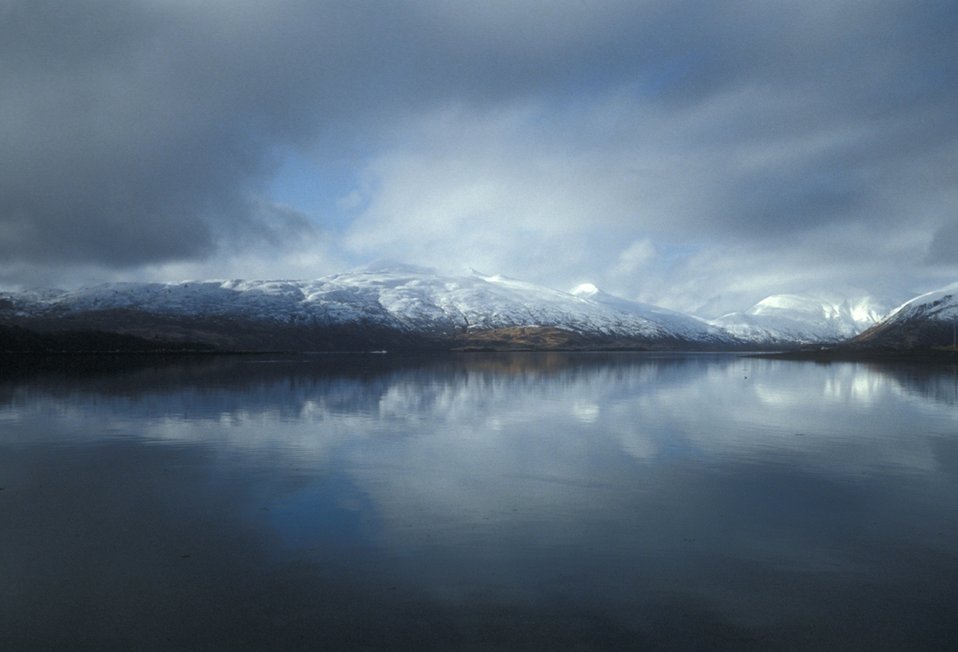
Womens Bay, Alaska Maritime NWR

The play of light and clouds creates an eerie effect over Womens Bay on Kodiak Island in the Alaska Maritime National Wildlife Refuge.